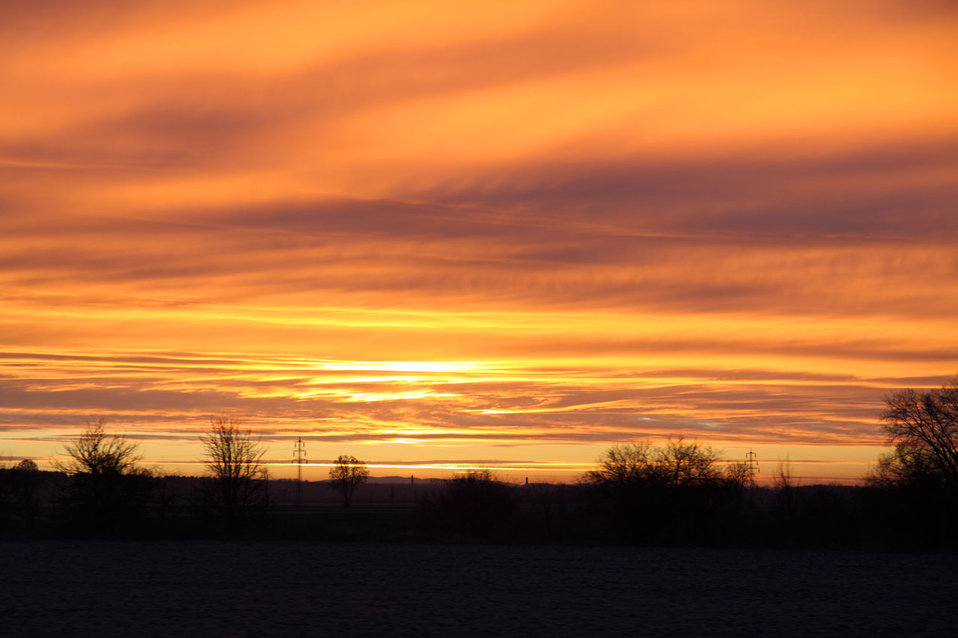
Orange sunrise

Orange emotional sunrise.